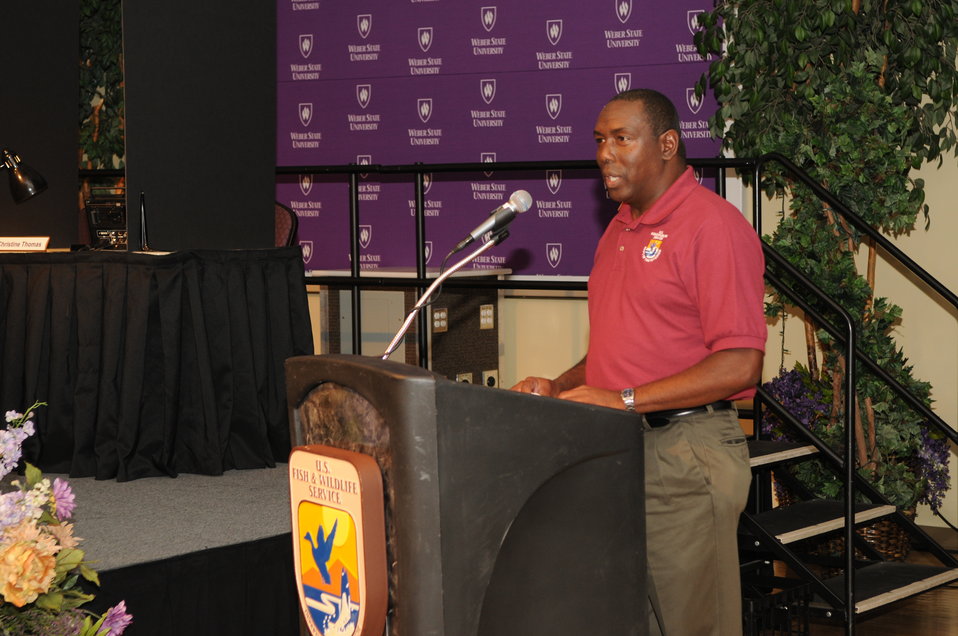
Opening Remarks

The U.S. Fish & Wildlife Service sponsored the 2012 Federal Duck Stamp Art Contest September 28 and 29 in Ogden, Utah, at Weber State University. A panel of five judges was responsible for choosing the art work used to design the 2013-2014 Migratory Bird Hunting and Conservation Stamp.